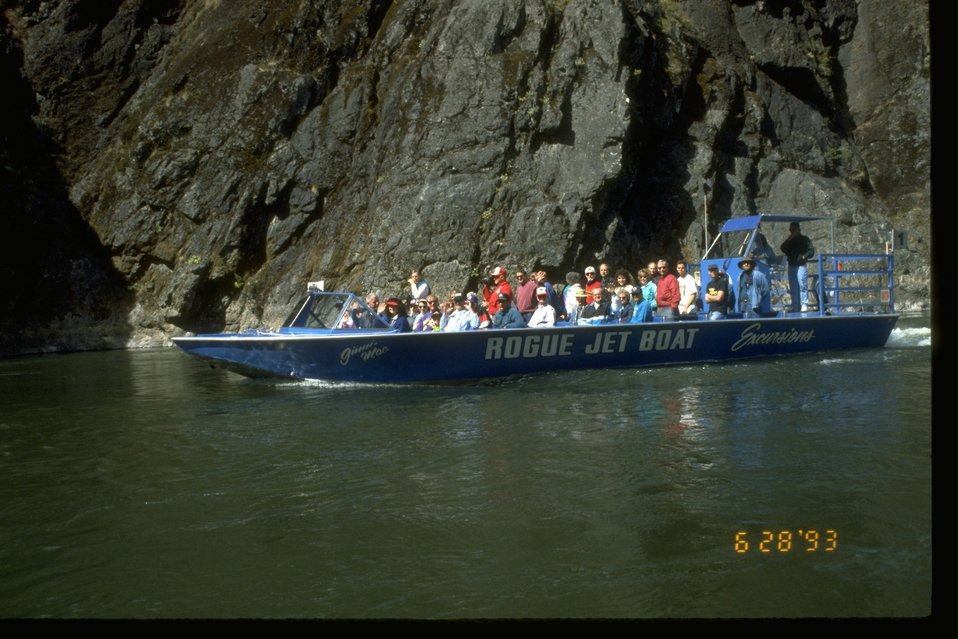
Large Rogue tourist Jet Boat in the Rogue River Hellgate Canyon.